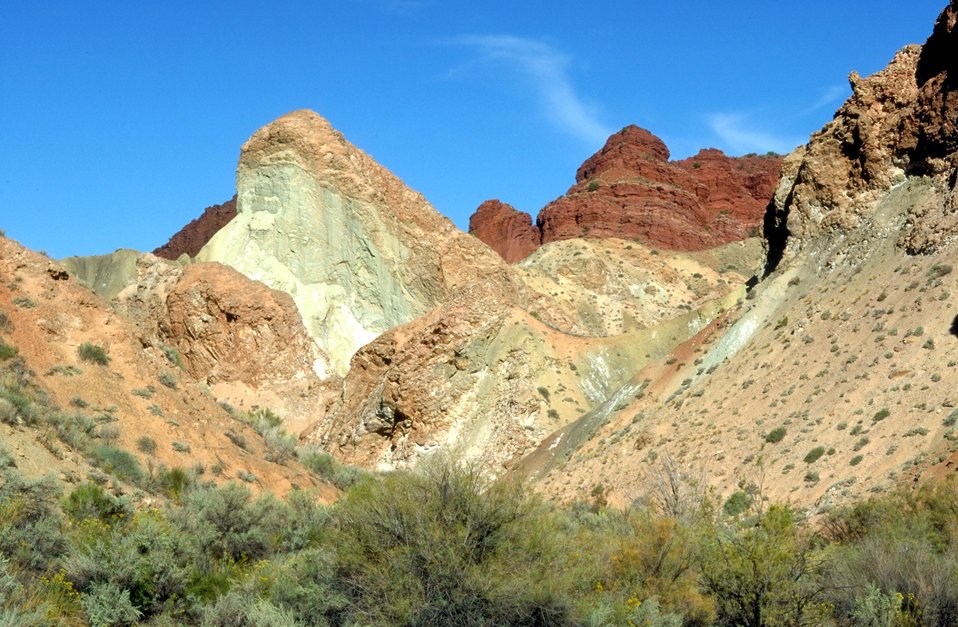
Multi colored rock, Onion Creek area near Moab, Utah.